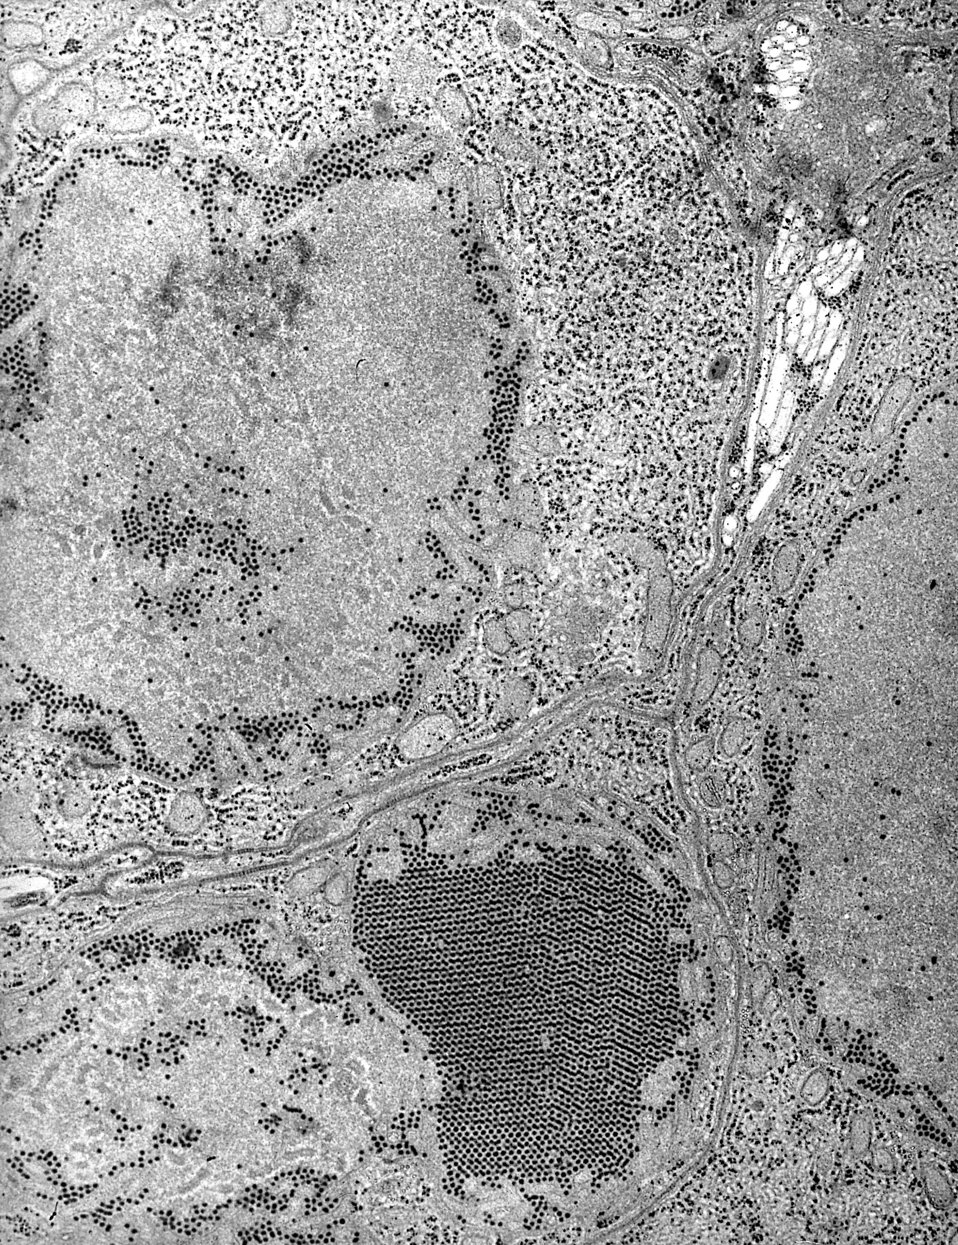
Electron micrograph of the St. Louis Encephalitis (SLE) virus.